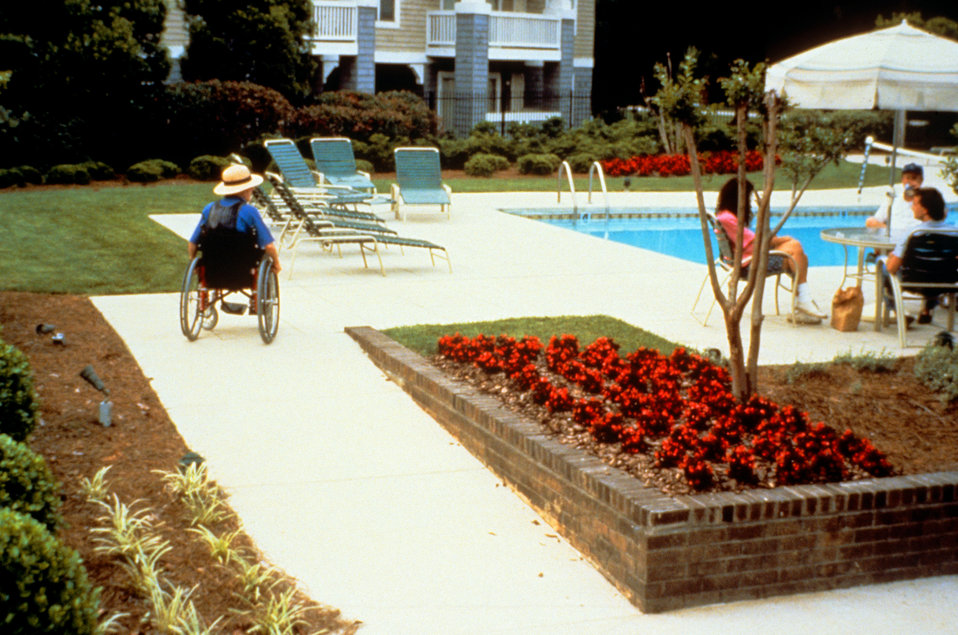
Seated in a wheelchair, this 1997 image depicted a person who'd accessed a public swimming pool area by way of a ramped walkway. This route provided the same short, safe, integrated path for everyone, which meant that those with mobility impairments, as well as the unimpaired were permitted to access the pool in a highly facilitated fashion.'The Center for Universal Design (CUD) is a national information, technical assistance, and research center that evaluates, develops, and promotes accessible and universal design in housing, commercial and public facilities, outdoor environments, and products.'